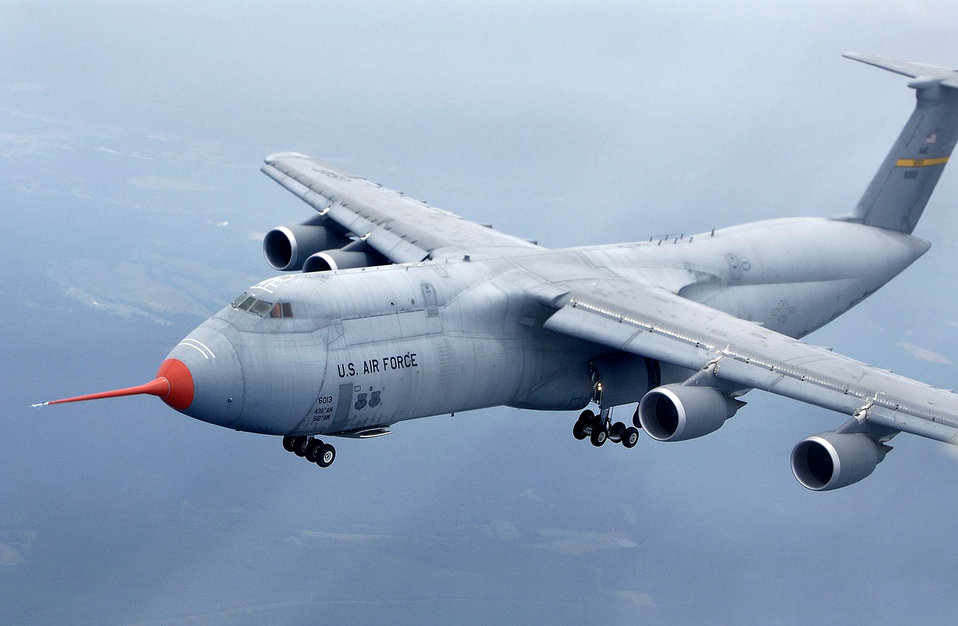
C-5 still going strong after 38 years

A modernized version of the C-5 Galaxy, known as the C-5M, made its maiden flight at Dobbins Air Reserve Base, Ga., on Monday, June 19. Upgrades to the venerable airlifter include new, more powerful engines; a modern cockpit with a digital, all weather flight control system, a new communications suite and enhanced navigation and safety equipment.